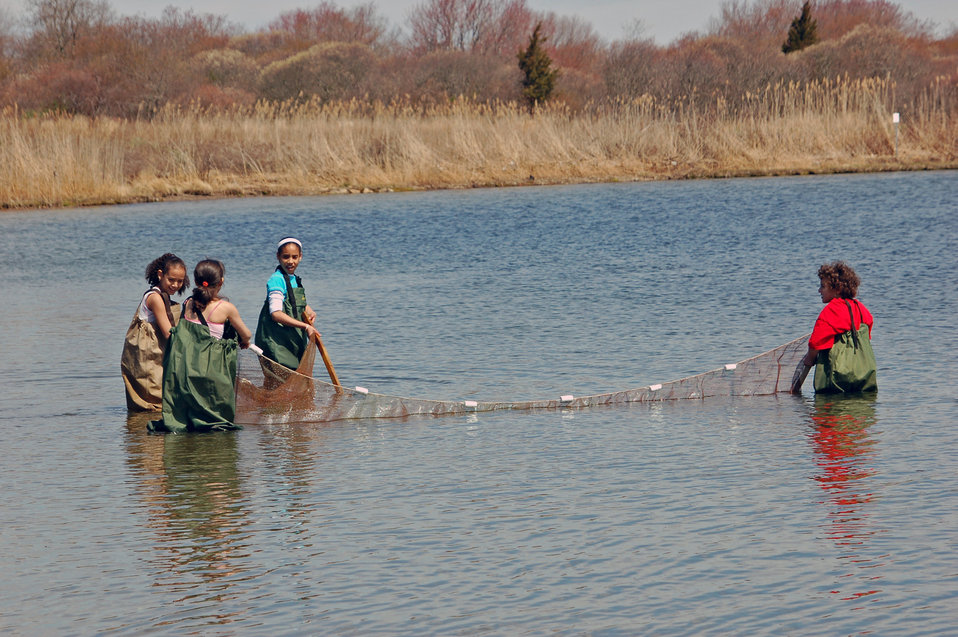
Environmental education

Ninigret National Wildlife Refuge, RI.